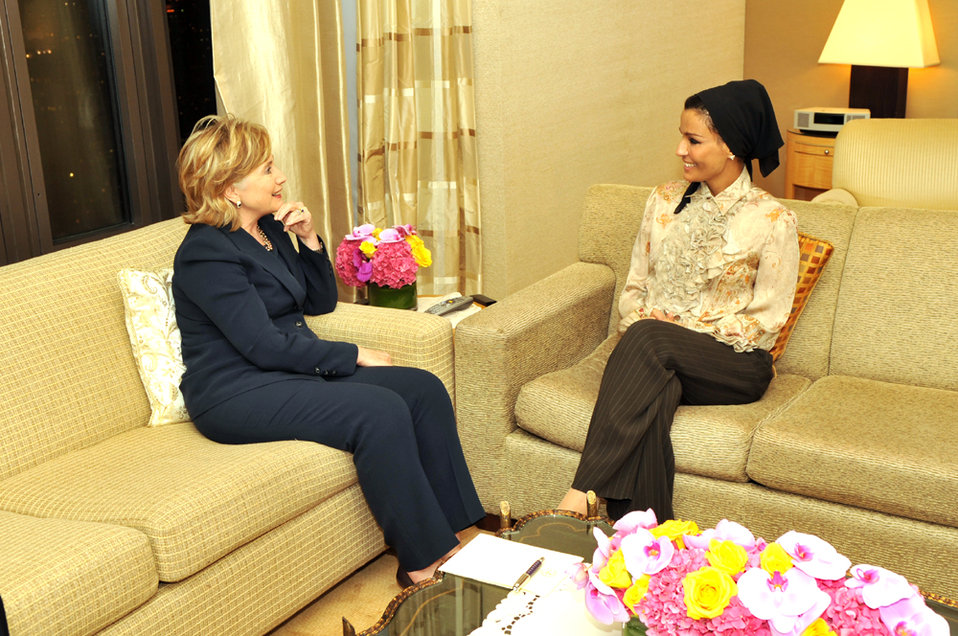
UNGA 2009: Secretary Clinton Meets With Consort of His Highness the Amir of Qatar

U.S. Secretary of State Hillary Rodham Clinton meets with The Consort of His Highness the Amir of Qatar Sheikh Moza bint Nasser Al Misnad at the Four Seasons Hotel Secretary Clinton at the Four Seasons Hotel in New York City, New York September 24, 2009.